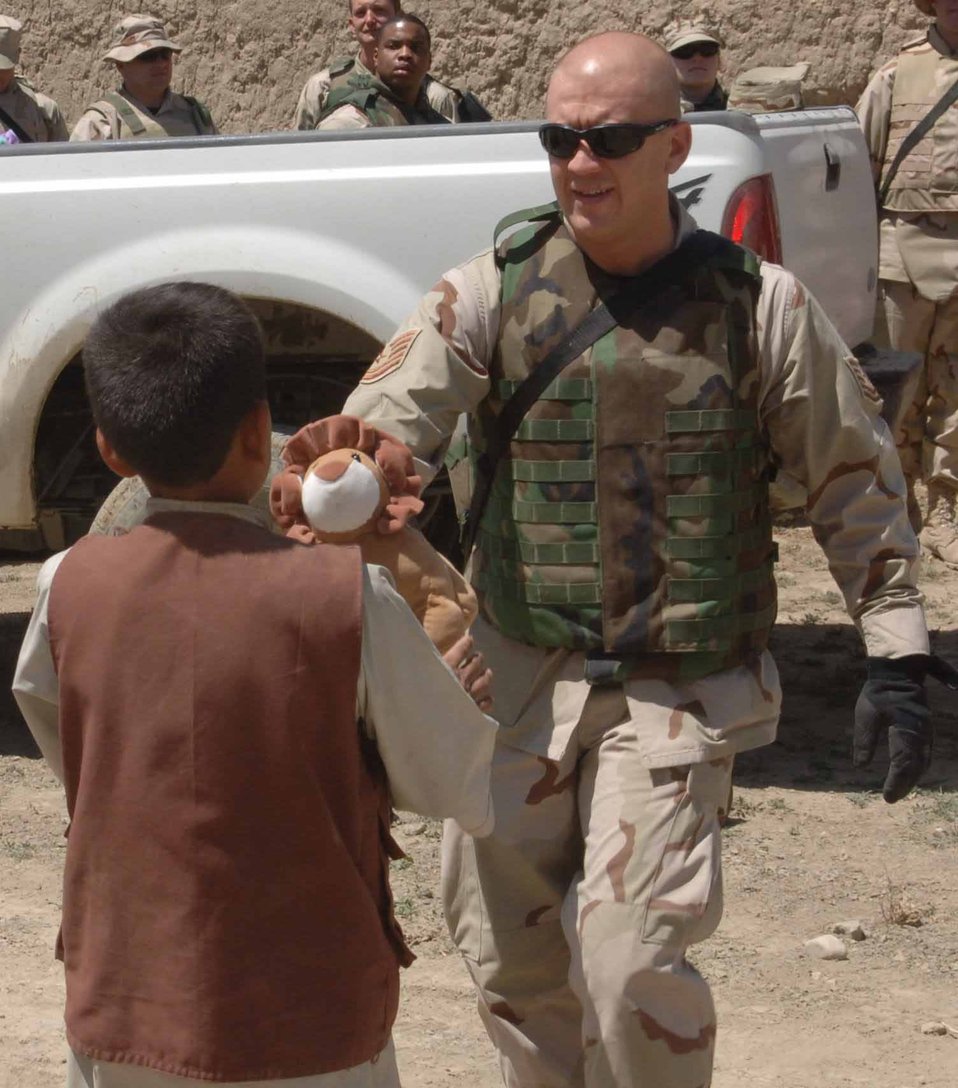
Airmen donate time, supplies to Afghans

PARWAN PROVINCE, Afghanistan -- Tech. Sgt. Antonio Guitron hands an Afghan boy a stuffed animal during an adopt-a-village trip here. Airmen from the 455th Air Expeditionary Wing at nearby Bagram Air Base take part in the program to assist villages in Afghanistan with infrastructure, fresh water, school supplies and toys for children. Sergeant Guitron is the noncommissioned officer in charge of the 455th Expeditionary Services Squadron and is deployed from Luke Air Force Base, Ariz.